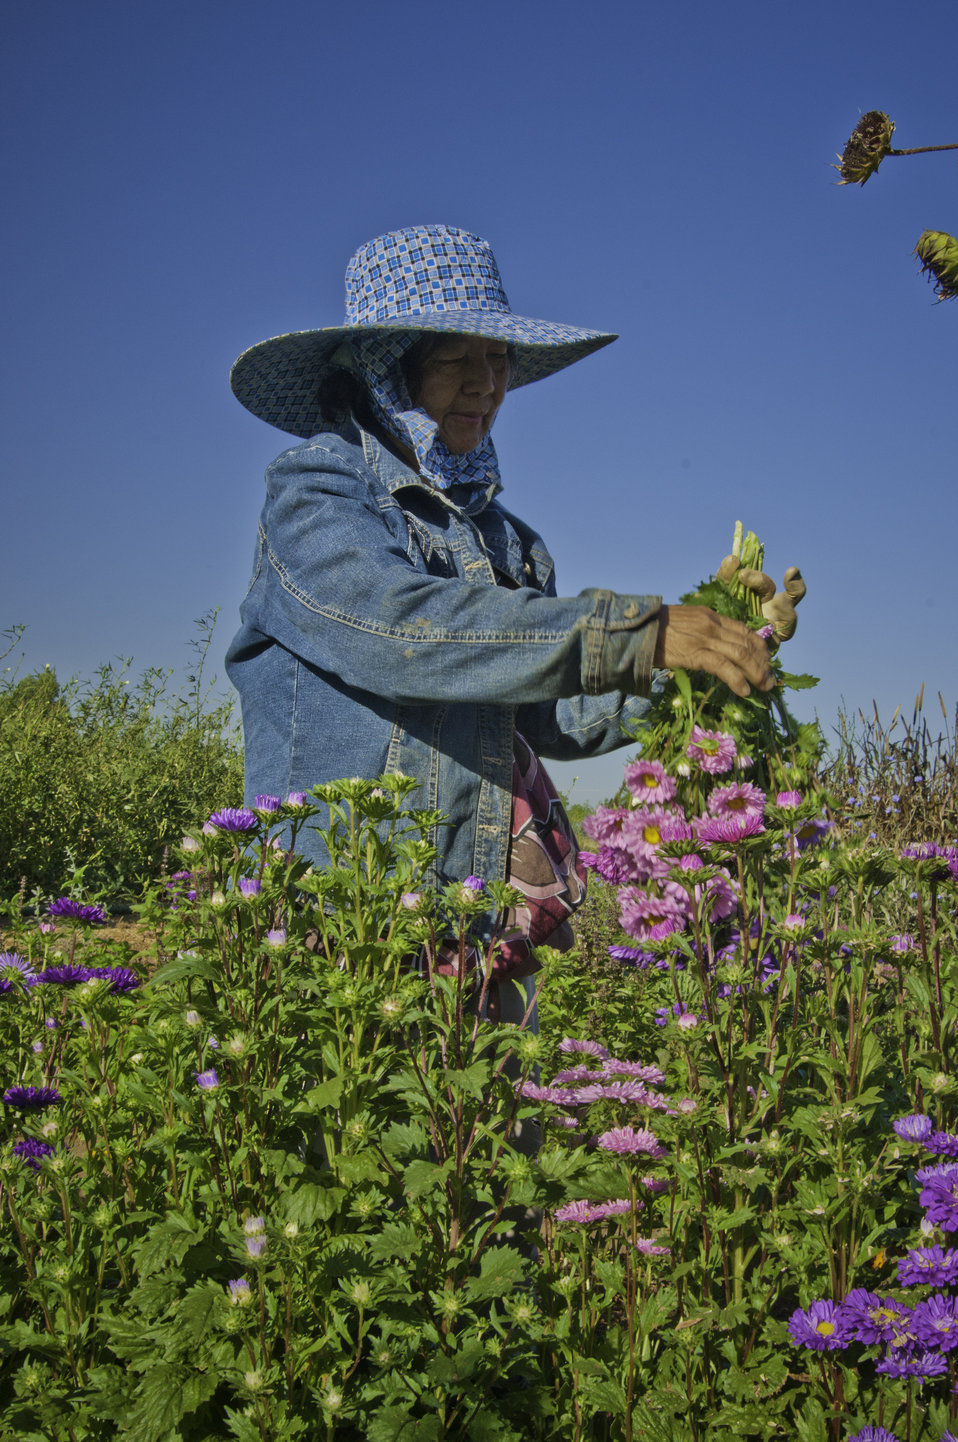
May Young Vu a Hmong farmer harvesting flowers on her farm May's Flower's in Sanger, California on Thursday, August 29, 2013.